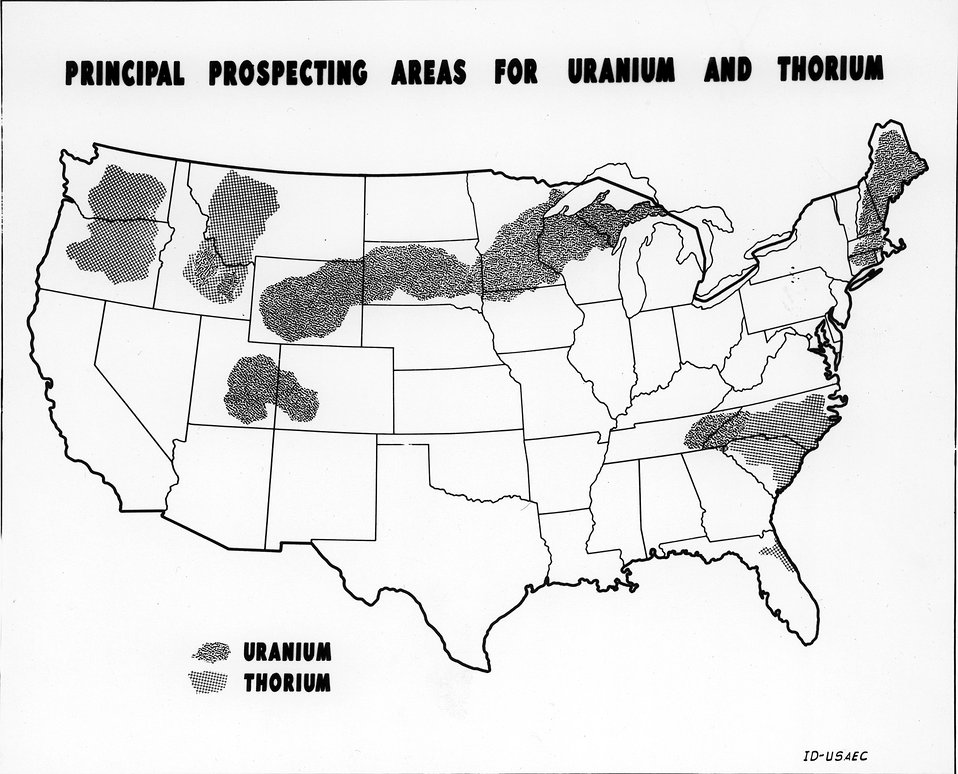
Principal Prospecting areas for Uranium and Thorium. c. 1950